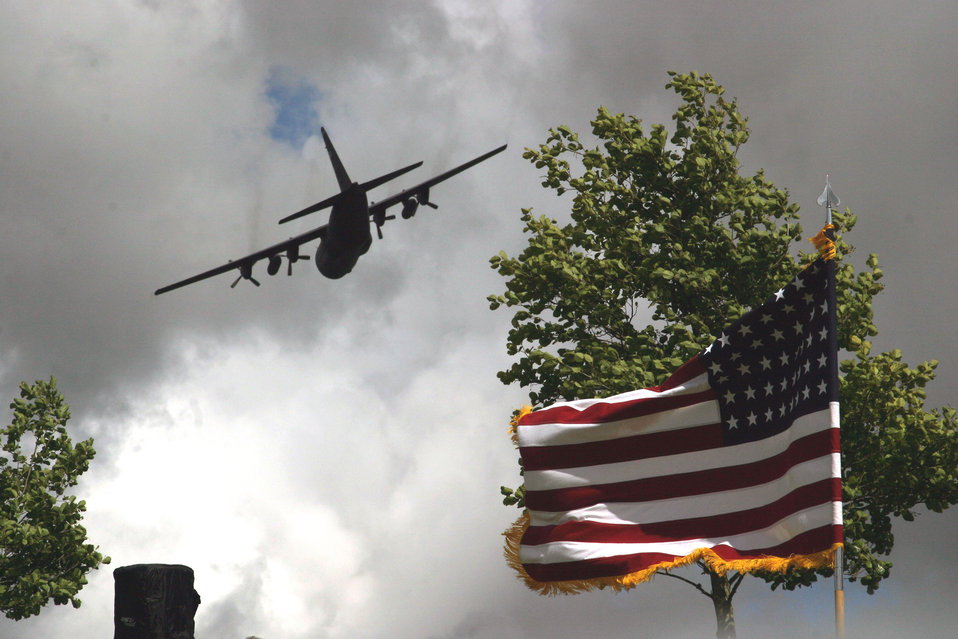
Memorial flight

A C-130 Hercules flies over the American flag at the Iron Mike Memorial Ceremony June 7 at La Fiere, France. Hundreds came to honor those who sacrificed during D-Day and World War II 65 years ago in this very same field.